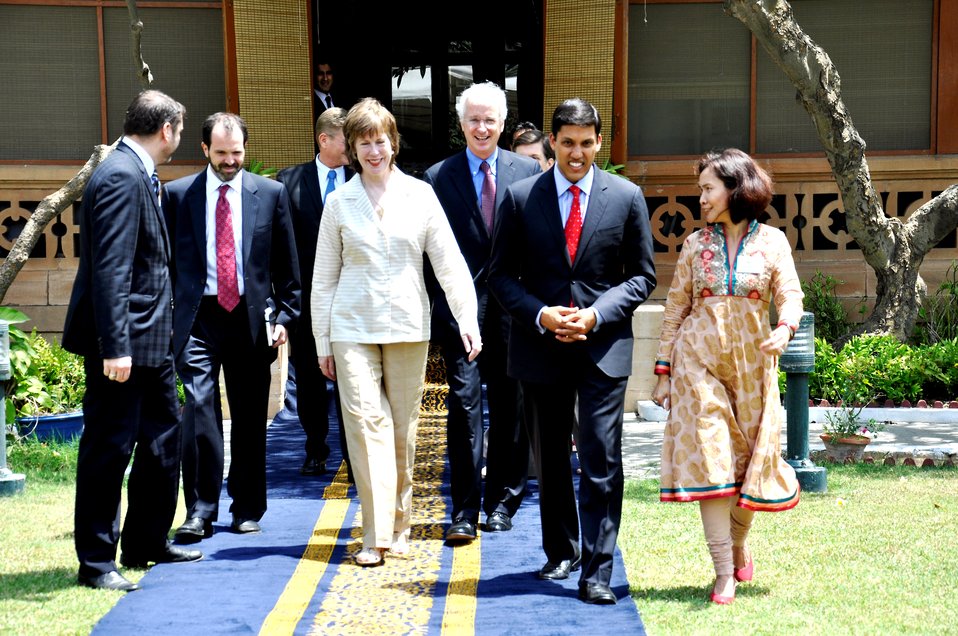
Dr. Rajiv Shah visiting Entrepreneurs project stalls along with Ambassador Cameron Munter and Dr. Marilyn Wyatt